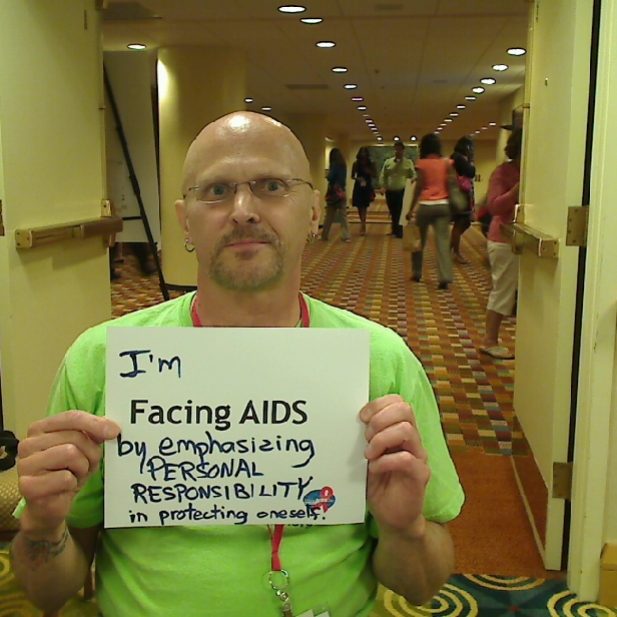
I'm Facing AIDS by emphasizing PERSONAL RESPONSIBILITY in protecting oneself.